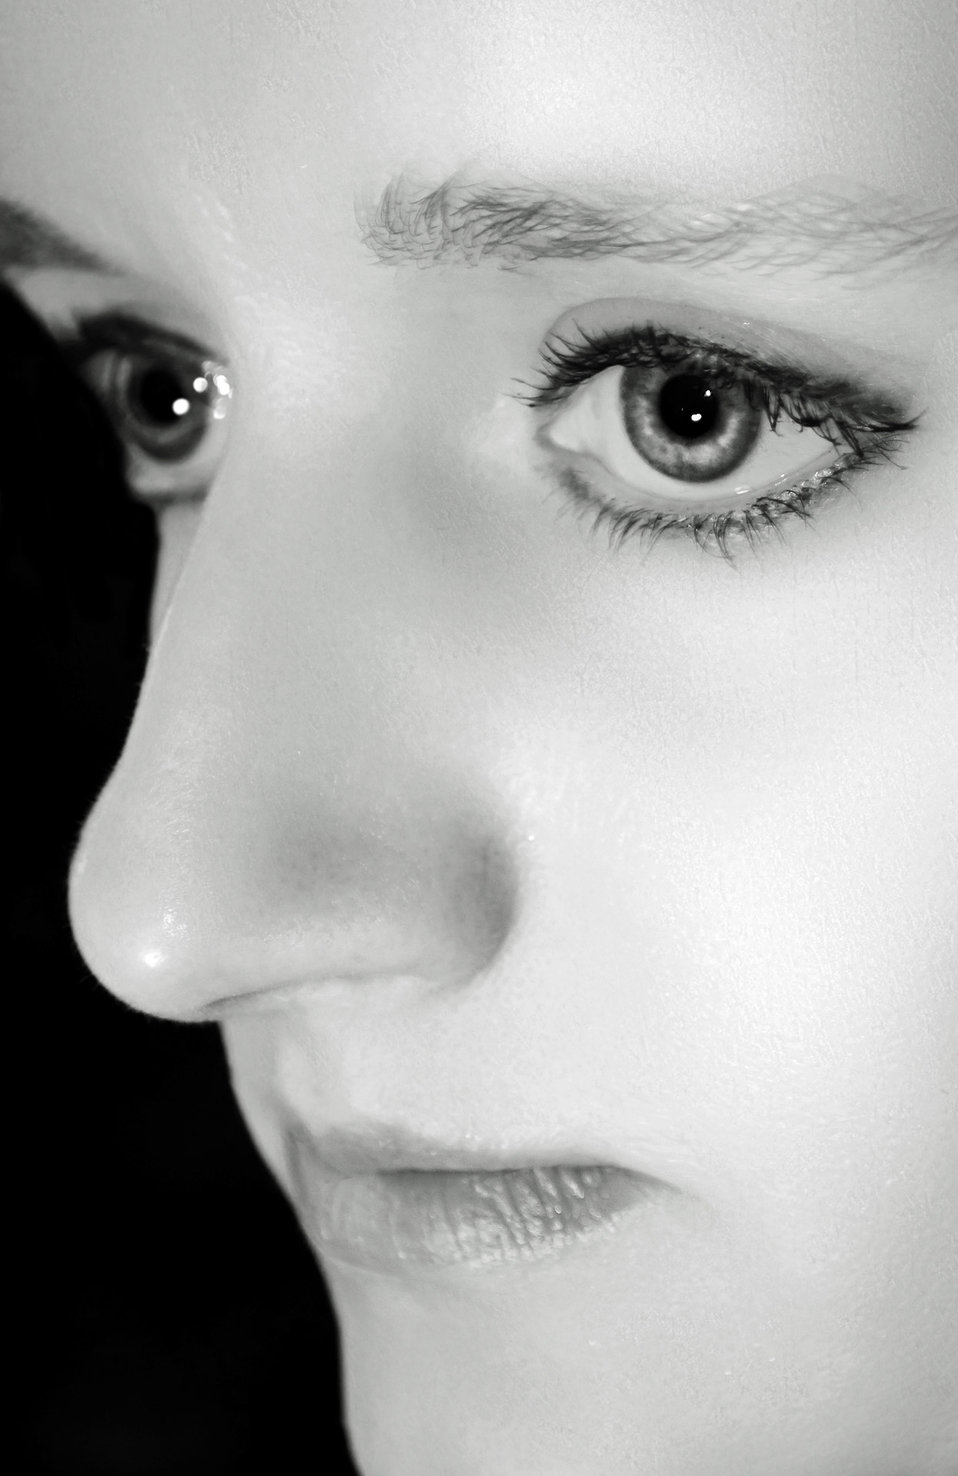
View into the unknown.